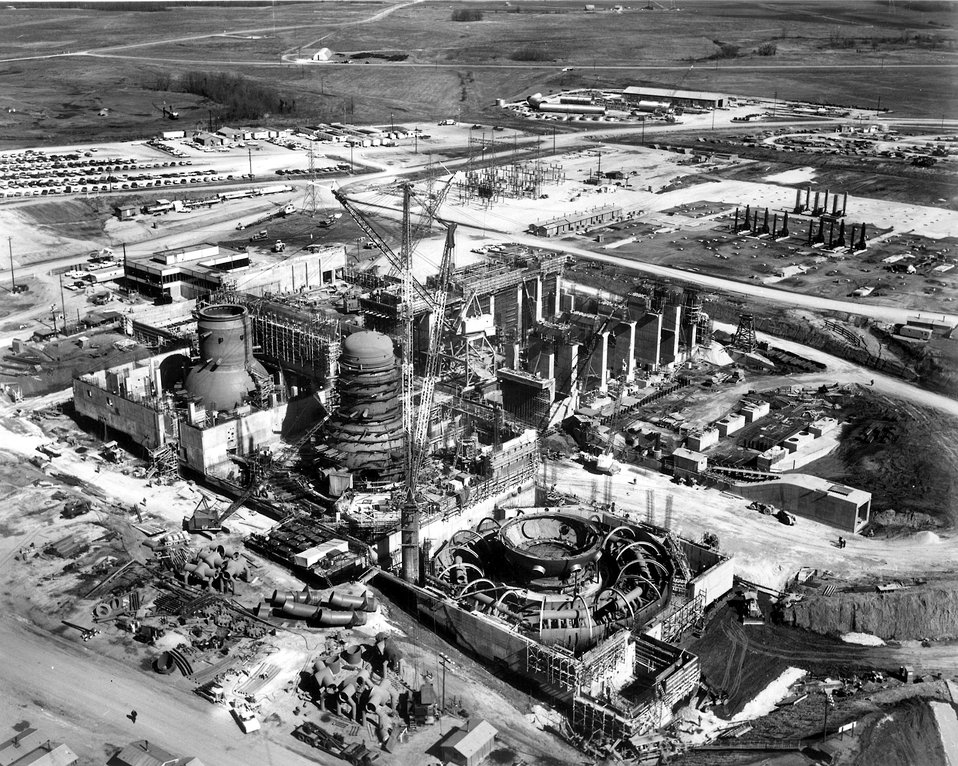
TVA's Browns Ferry Nuclear Power Plant under construction at a site on Wheeler Lake, 10 miles southwest of Athens, Alabama. Circa 1970.